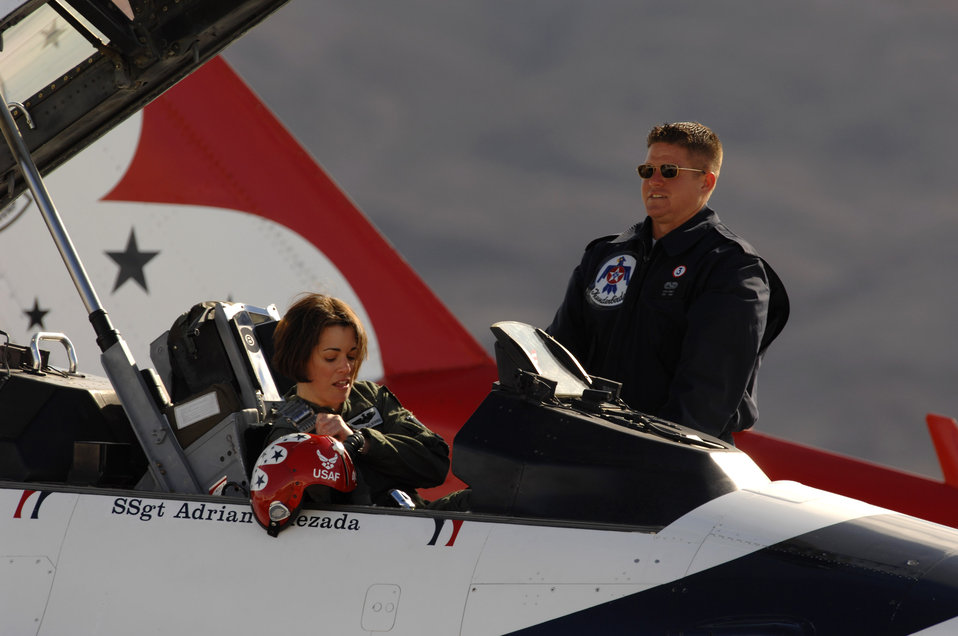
Pilots bid adieu to Thunderbird duty

Maj. Nicole Malachowski prepares to take off for a practice sortie with the Thunderbirds in an F-16 Fighting Falcon as Staff Sgt. Steve Wyatt assists. Major Malachowski is the Thunderbird #3 right wing pilot and just finished her two-year tour with the Air Force Demonstration Squadron. Sergeant Wyatt is the Thunderbird #3 crew chief.